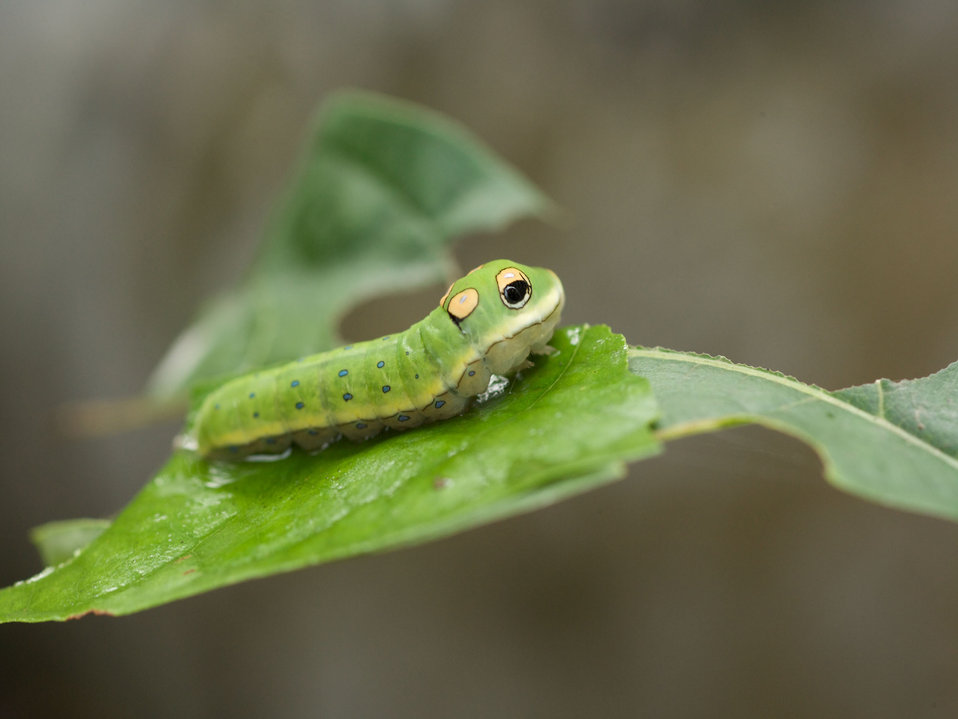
spicebush swallowtail caterpillar

spicebush swallowtail butterfly larva